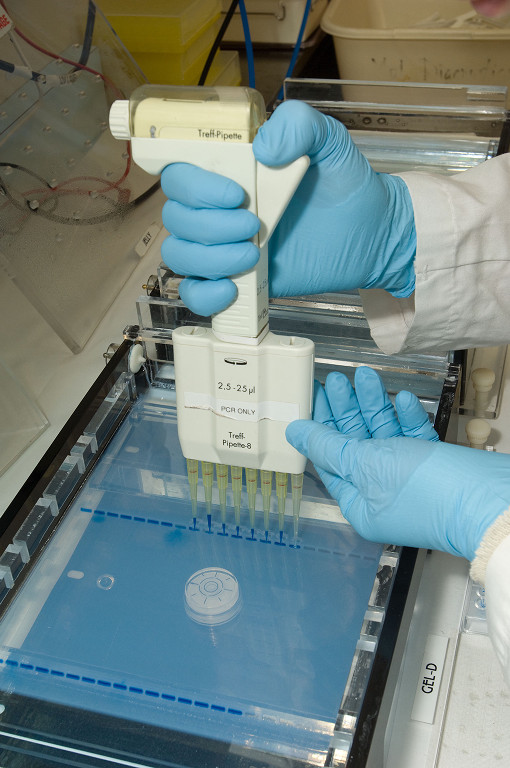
CPHST

A U.S. Department of Agriculture (USDA) Animal and Plant Health Inspection Service (APIS) employee prepares an agarose gel for electrophoresis of DNA at the Center for Plant Health Science and Technology Otis Lab in Cape Cod, MA on June 13, 2012. The Otis Lab’s mission is to identify, develop, and transfer technology for the survey, exclusion, and control of plant pests and diseases.